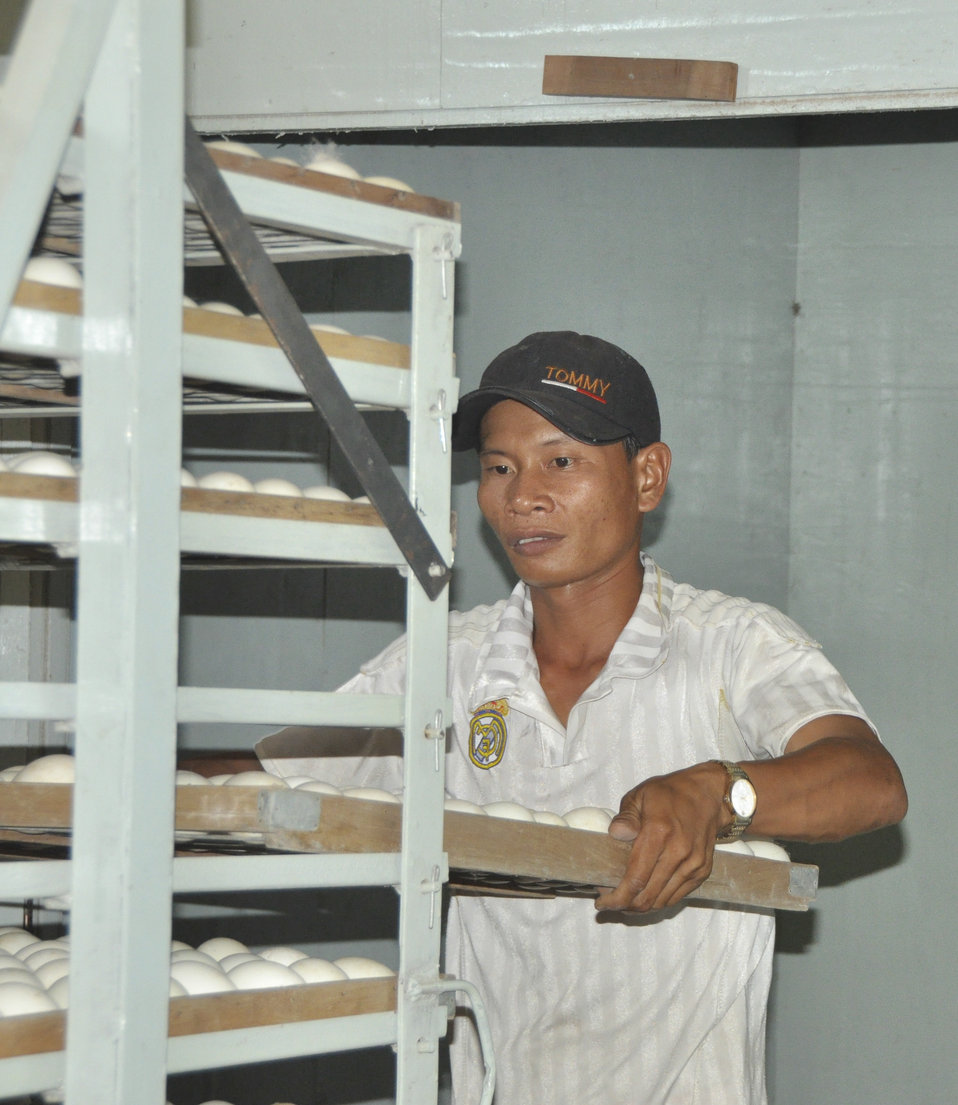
Duck egg hatchery in Can Tho

USAID Vietnam